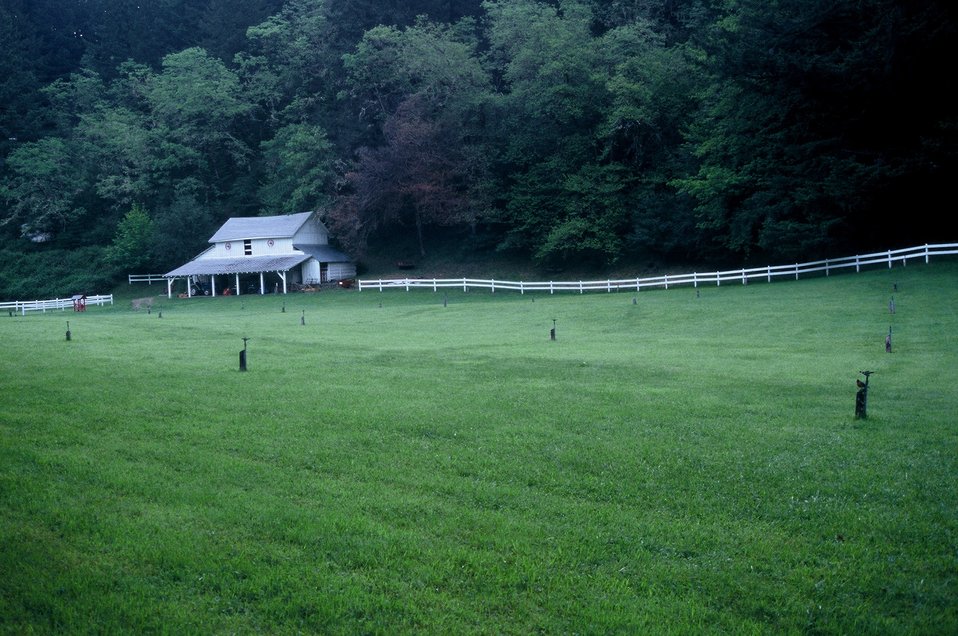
Wild section of the Rogue River from Grave Creek to Foster Bar May 19 to May 22.